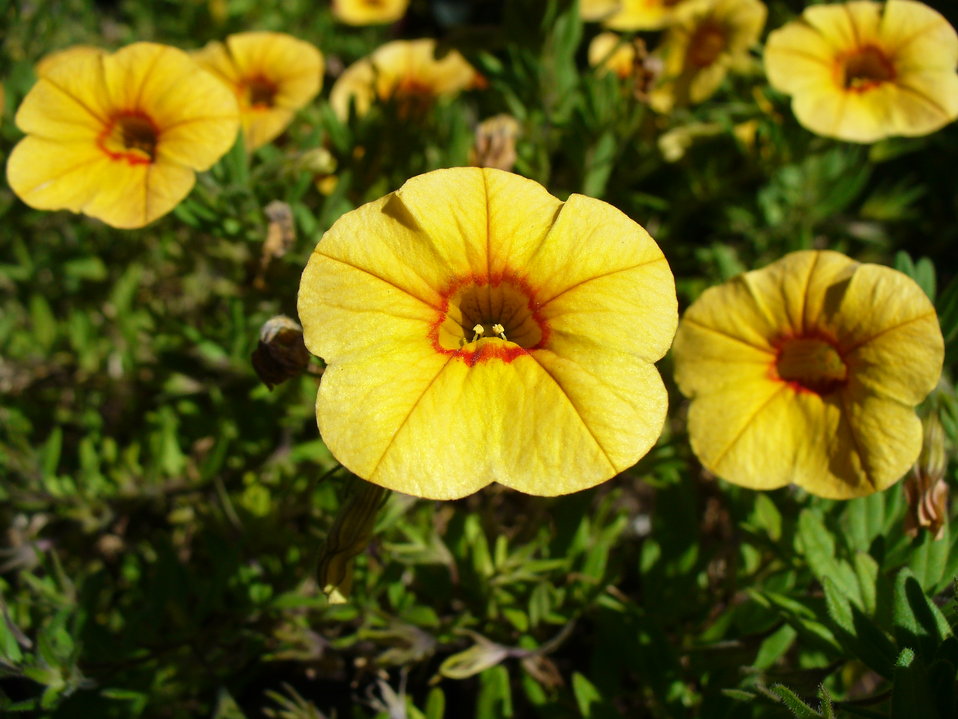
I am the originator of this photo. I hold the copyright. I release it to the public domain. This photo depicts a flower of a small-flowered bedding plant, a 'Million Bells' Calibrachoa cultivar.